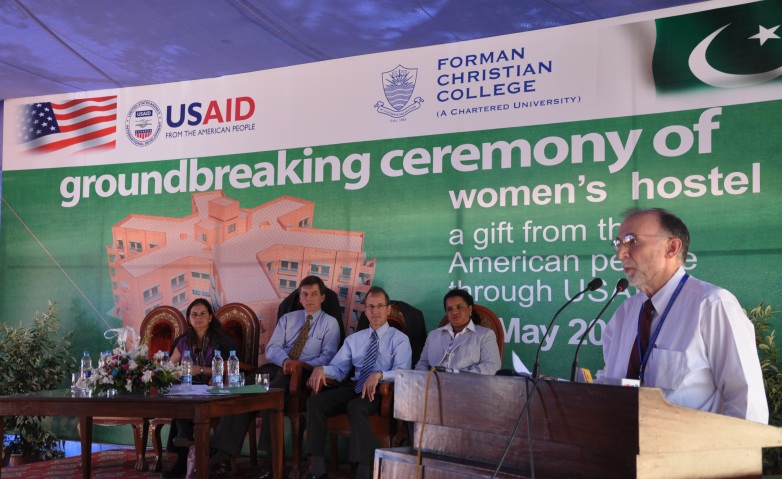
Rector-designate for FCC Dr. James Tebbe addressing the students and guests at the groundbreaking ceremony.